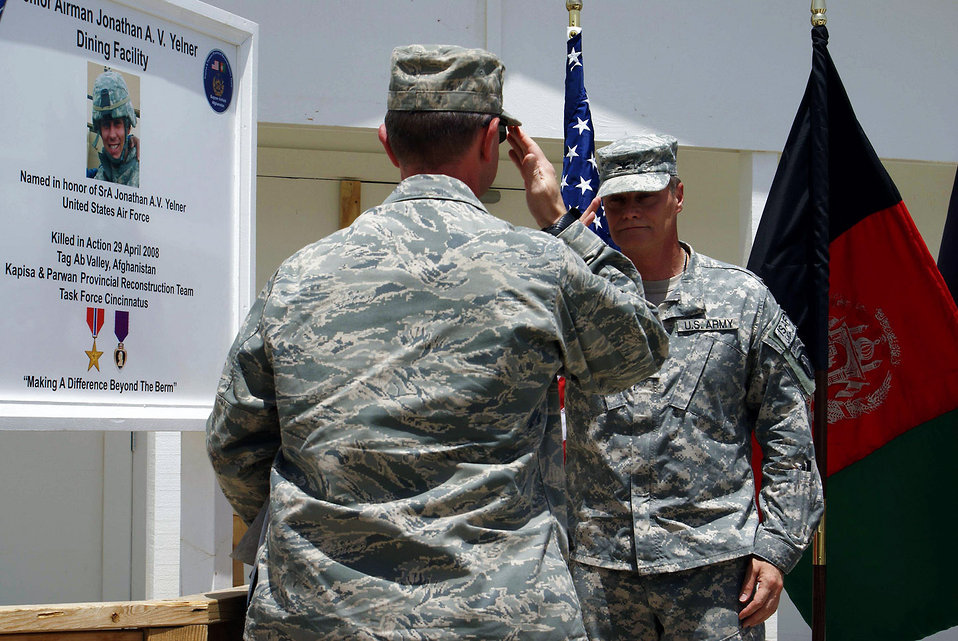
Bagram dedicates dining facility to fallen Airman

Lieutenant Col. William D. Andersen, Kapisa-Parwan Provincial Reconstruction Team commander, salutes Army Col. Jonathan Ives upon uncovering the sign dedicating a dining facility on Bagram Air Field, Afghanistan to Senior Airman Jonathan A.V. Yelner. Airman Yelner, deployed from Ellsworth Air Force Base, S.D., was killed April 29 when an improvised explosive device detonated underneath his vehicle in Tag Ab Valley, Kapisa Province, Afghanistan.